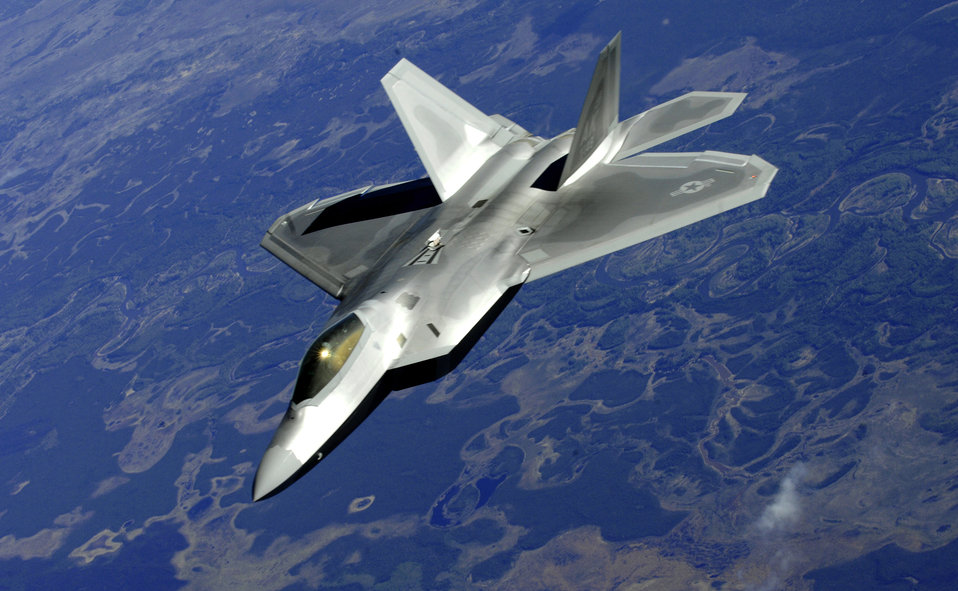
Arctic Fencing Interagency Arrow 2010

An F-22 Raptor from Elmendorf Air Force Base pulls alongside a KC-135 Stratotanker, simulating a Boeing 747, after federal air marshals subdue a simulated terrorist onboard the plane during Arctic Fencing Inter-Agency Arrow 2010 field training exercise May 26, 2010, at Elmendorf Air Force Base, Alaska.